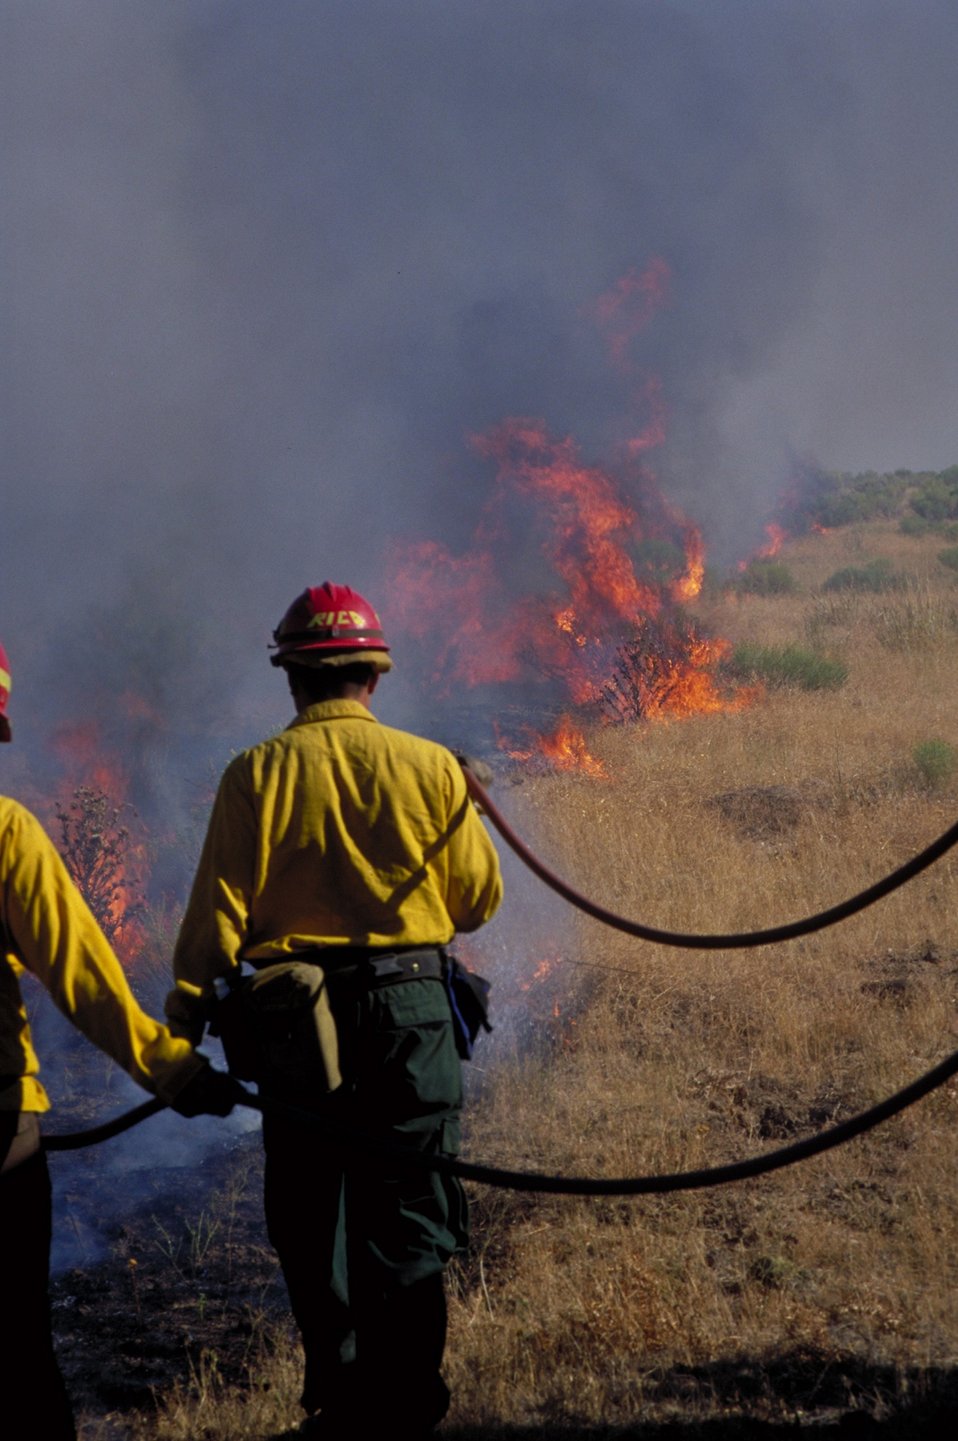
Prescribed burn Fire Season 2000 Lower Snake River District LSRD